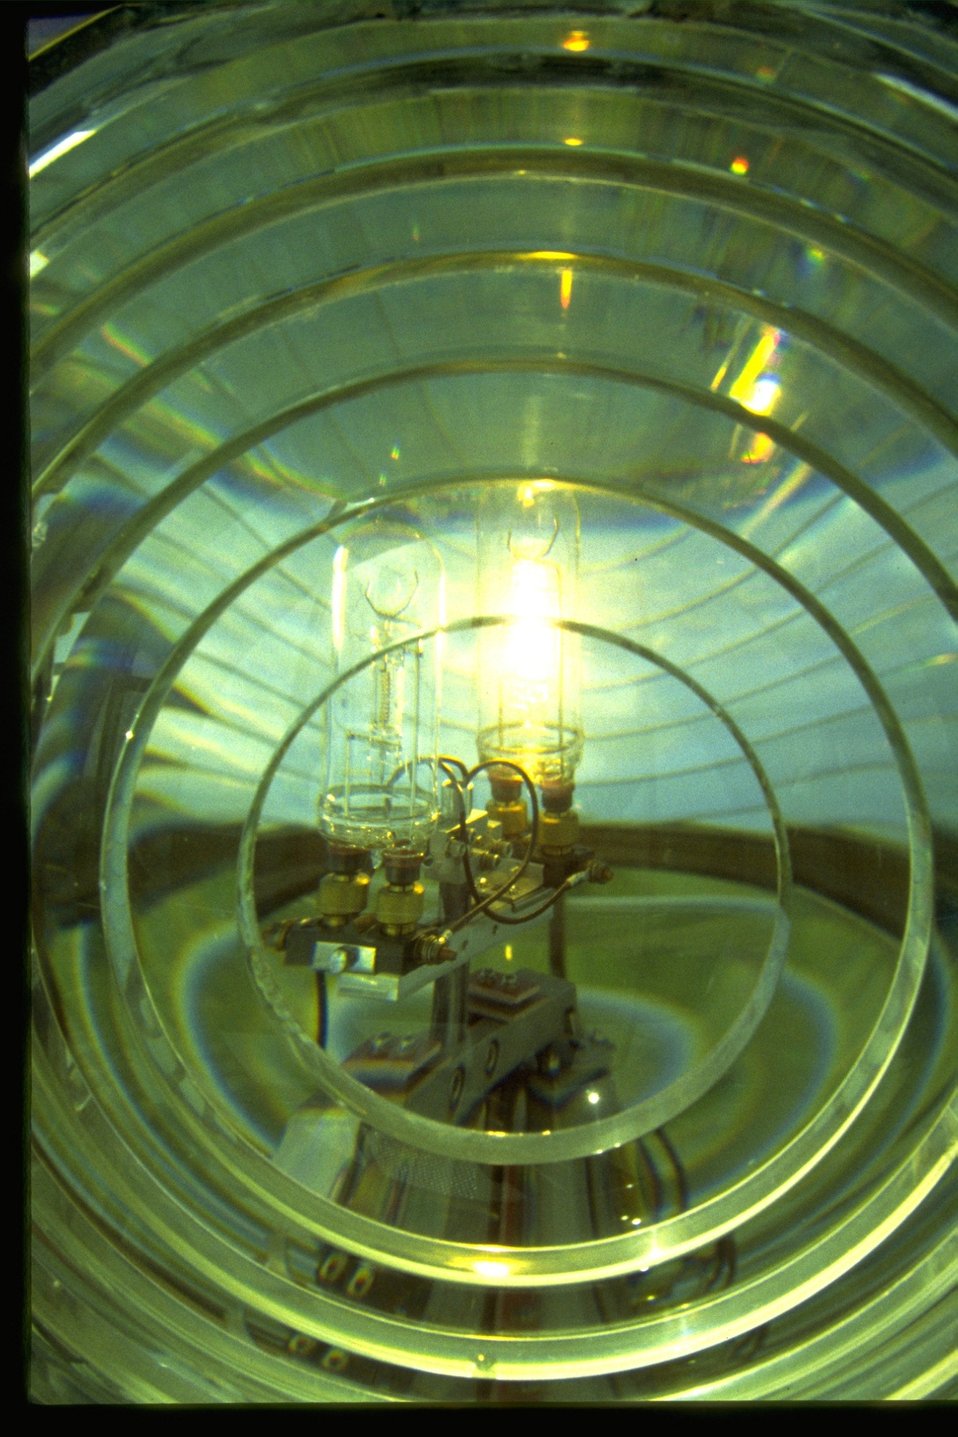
Cape Blanco, lighthouse lens.